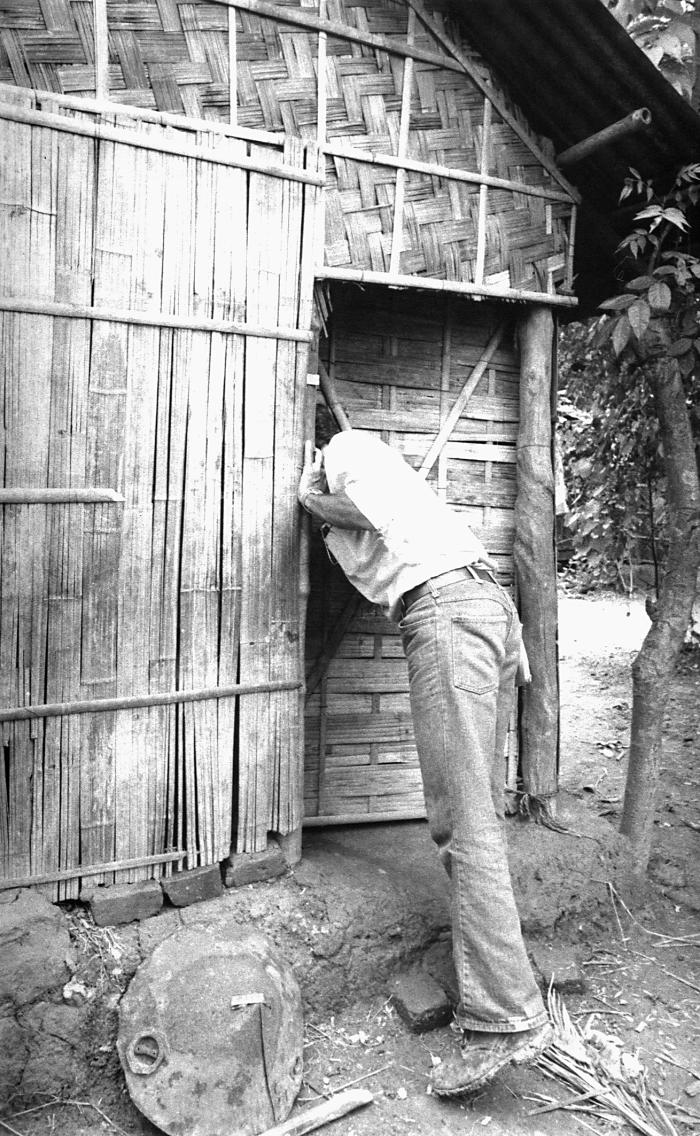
This Bangladesh smallpox eradication team epidemiologist was going from house to house in search of possible smallpox cases. Once a case was discovered, and was confirmed by an on-site eradication team epidemiologist such as the one pictured here, the name was entered into the 'Containment Book'. The Containment Book was a ledger, which recorded all of the names of anyone living in, or within one half of a mile from a smallpox case, and subsequently all those listed were vaccinated against smallpox. Those vaccinated were followed until a 'successful' vaccination was observed. Periodic surveys showed that by the end of the program, 80% of the public knew about the cash award presented to those who had informed the public health authorities of a confirmed smallpox case.